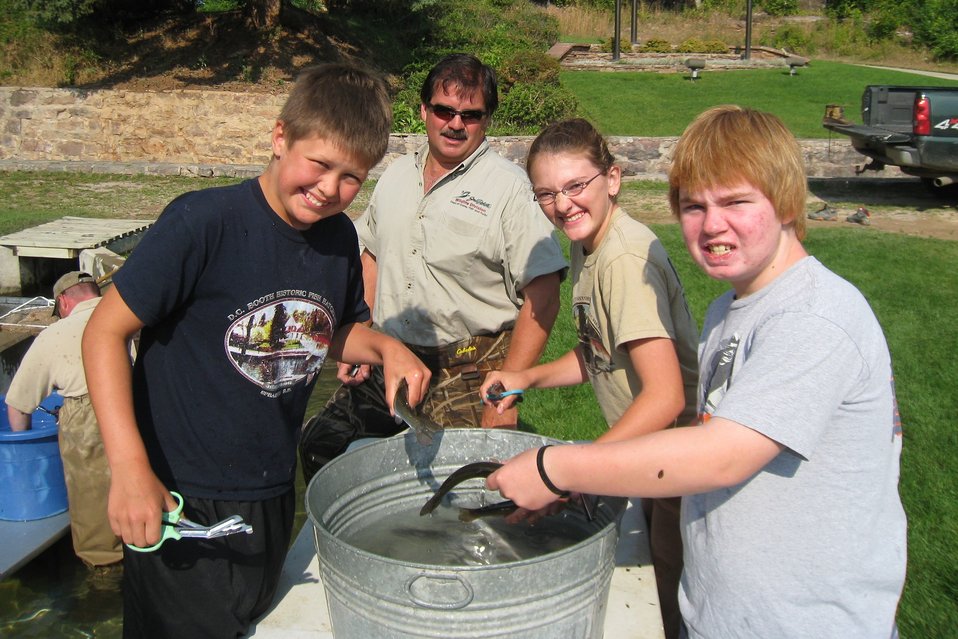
Youth at D.C. Booth Historic National Fish Hatchery

Gabriel Terveen, Keith Wintersteen, Alisha Williamson, and Billy Beaty fin clip rainbow trout at the D.C. Booth Historic National Fish Hatchery and Archives in Spearfish, South Dakota.